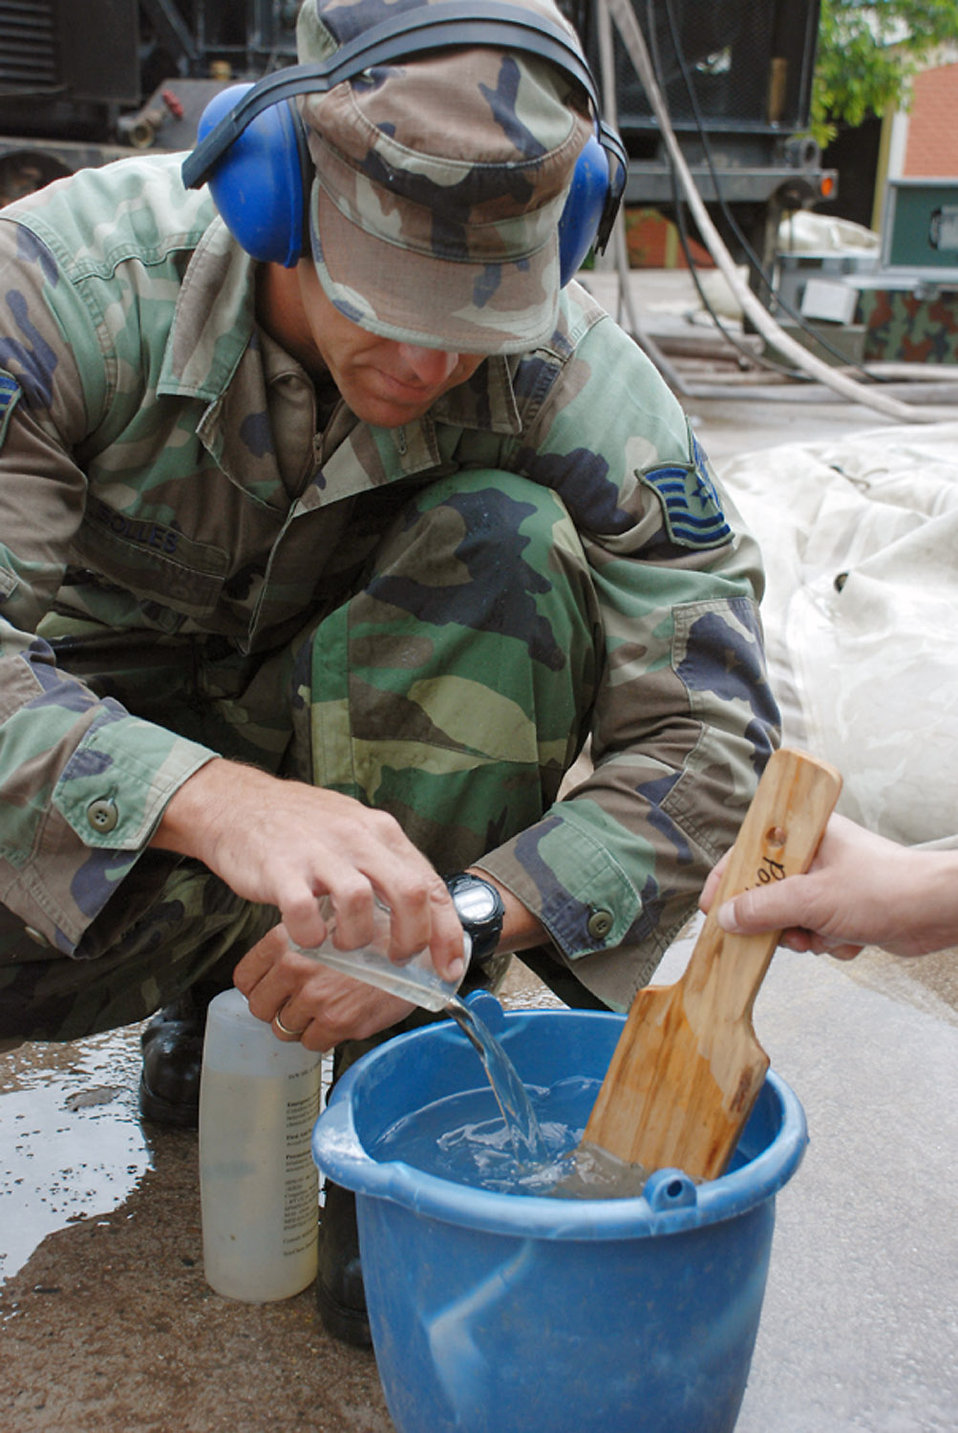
Servicemembers provide water to flood-affected community

Tech. Sgt. Shane Bolles works on purifying the well water Oct. 29 at La Paz, Honduras. After only a few days, the servicemembers have purified more than 2,500 gallons of drinking water from the flood affected community. Sergeant Bolles is assigned to Soto Cano Air Base, Honduras, deployed from Dyess Air Force Base, Texas.